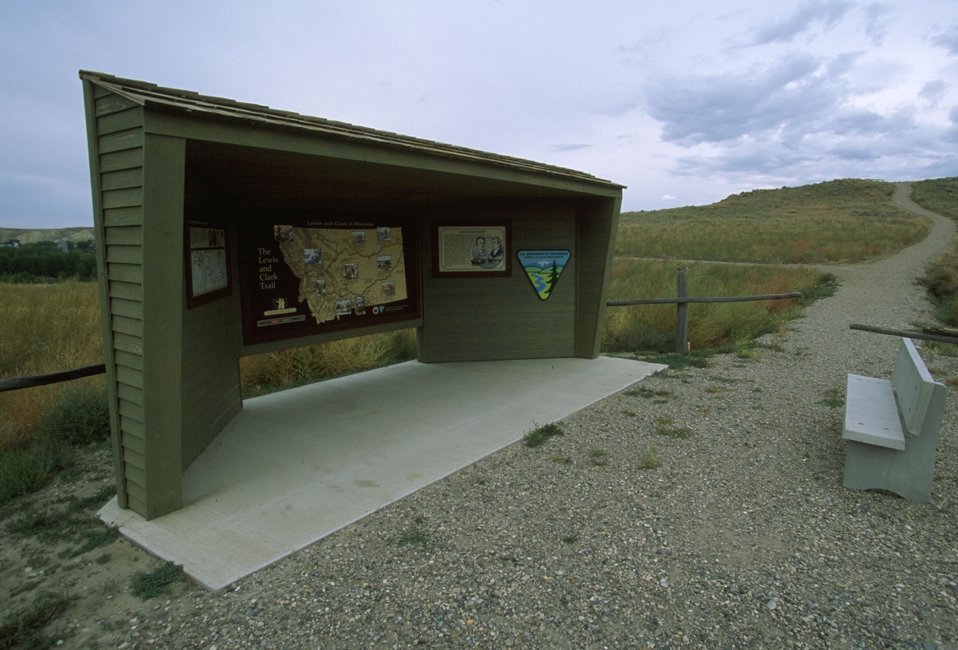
Interpretive kiosk at Decision Point, the confluence of the Marias and Missouri Rivers